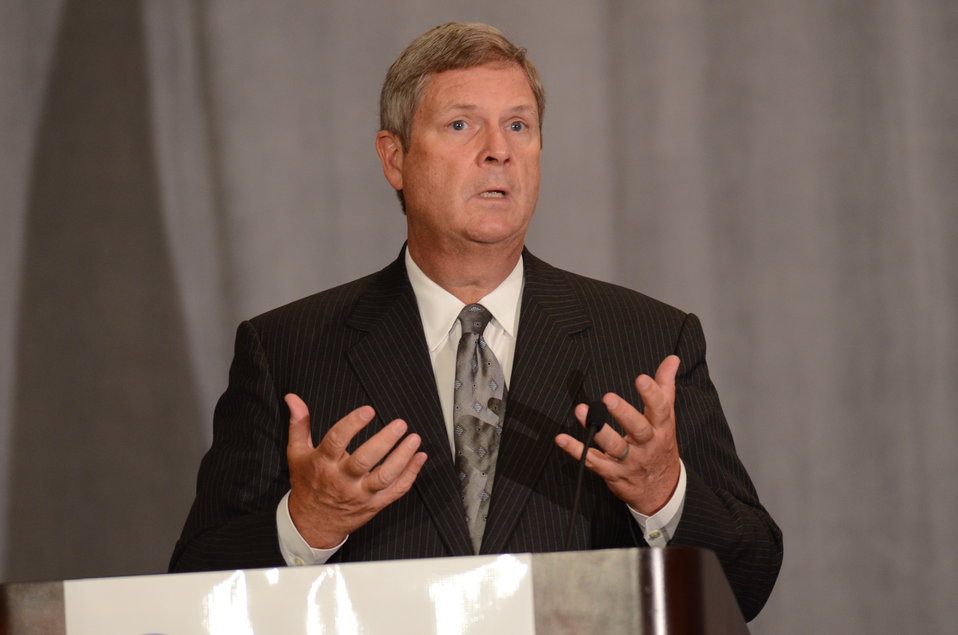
Agriculture Secretary Tom Vilsack speaks at the International Association for Food Protection (IAPP) 100th annual meeting in Milwaukee, WI, on Wednesday, August 3, 2011. IAPP is committed to providing members worldwide with a forum to exchange information on protecting the global food supply.